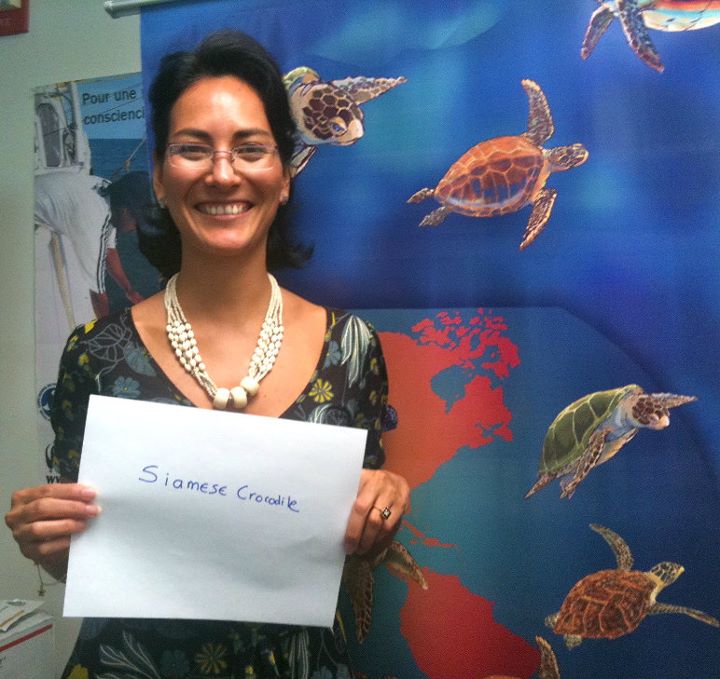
Veronica Caceres, 'Siamese Crocodile,'

International Affairs participates in FFI's In Our Hands campaign